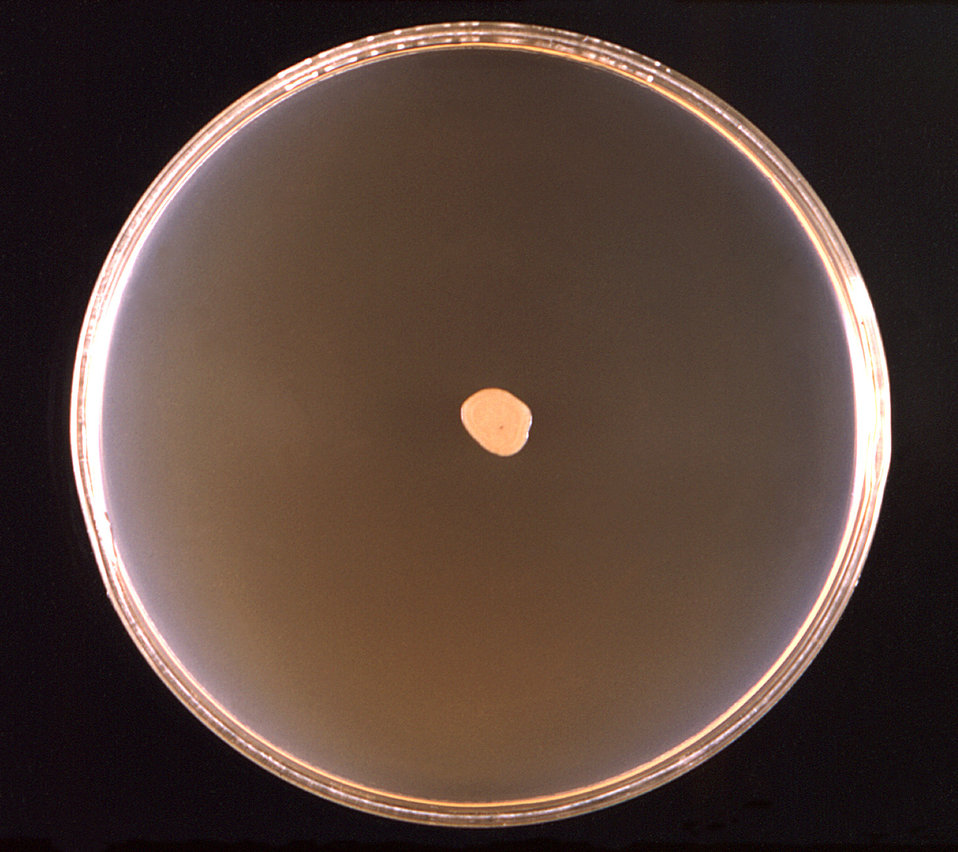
This 1971 image depicted a frontal view of a Petri dish culture in which a small colony of Prototheca stagnora algal organisms had been cultivated.